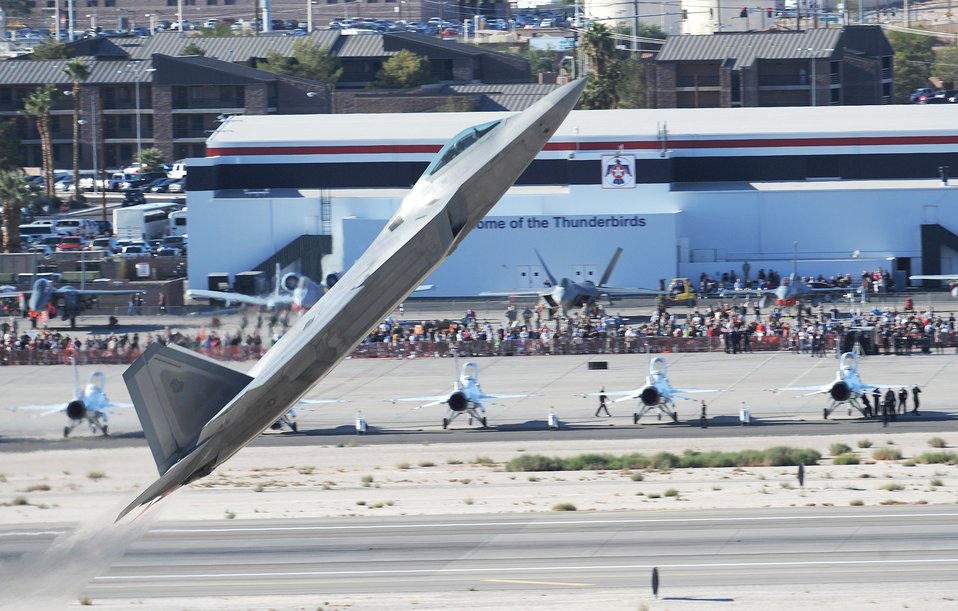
Maximum supremacy

An F-22 Raptor performs a maximum climb takeoff during the 2010 air show at Nellis Air Force Base, Nev., Nov. 12, 2010. The open house is an opportunity for the Las Vegas community to view aerial demonstrations and static displays of various aircraft from the military.